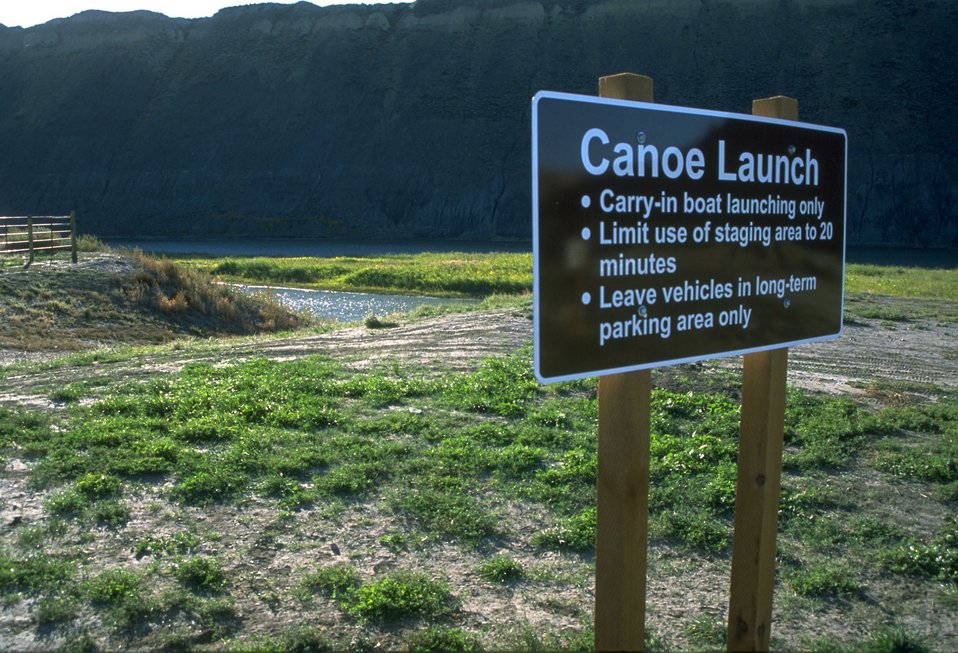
Sign at canoe launching area at Fort Benton Fairgrounds